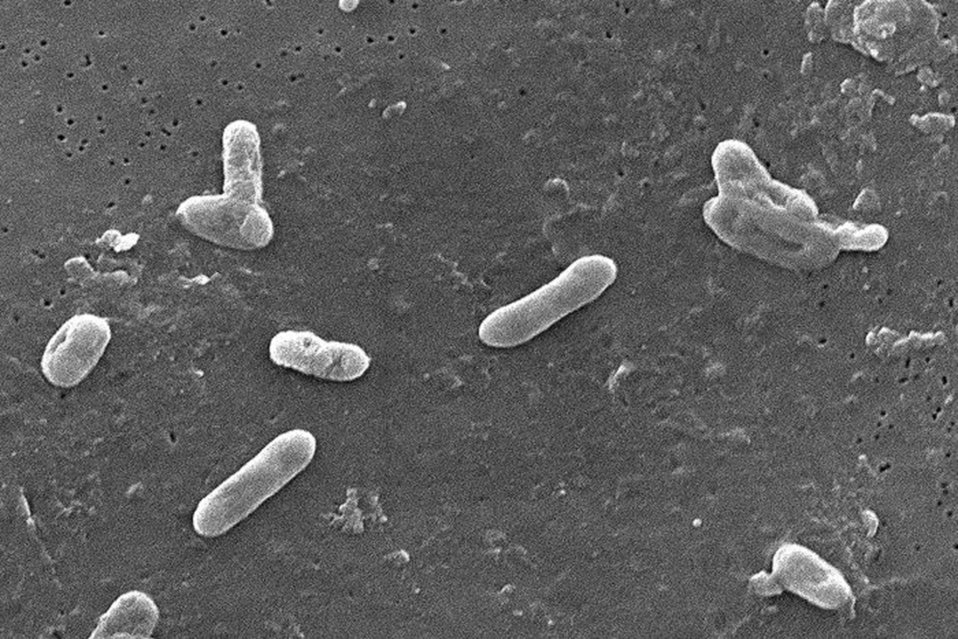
This scanning electron micrograph (SEM) depicted a number of Gram-negative Bordetella bronchiseptica coccobacilli bacteria. This organism is commonly found to be the cause of respiratory tract infections in dogs, as well as human beings whose immune system had been compromised including those who are infected by the HIV virus.